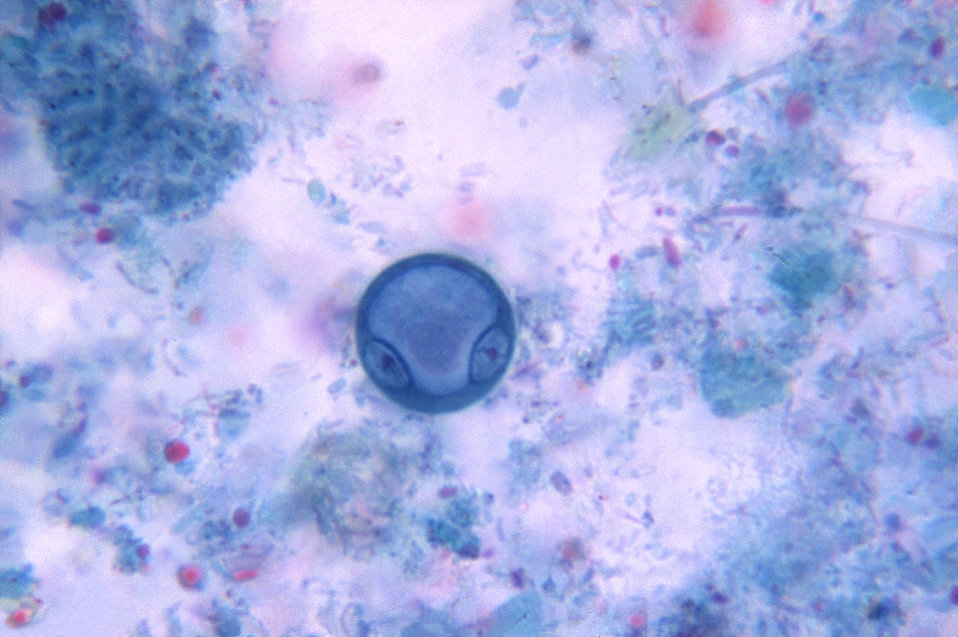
Magnified 1125X, this photomicrograph revealed the presence of a parasitic Entamoeba coli binucleated cyst. Mature E. coli cysts typically have 8 nuclei, and measure usually 15�m to 25�m (range 10�m to 35�m). E. coli is the only species of Entamoeba with more than four nuclei in the cyst stage. Chromatoid bodies are seen less frequently than in E. histolytica. When present they are usually splinter like with pointed ends and thus different from the chromatoid bodies of E. histolytica, which have rounded ends.